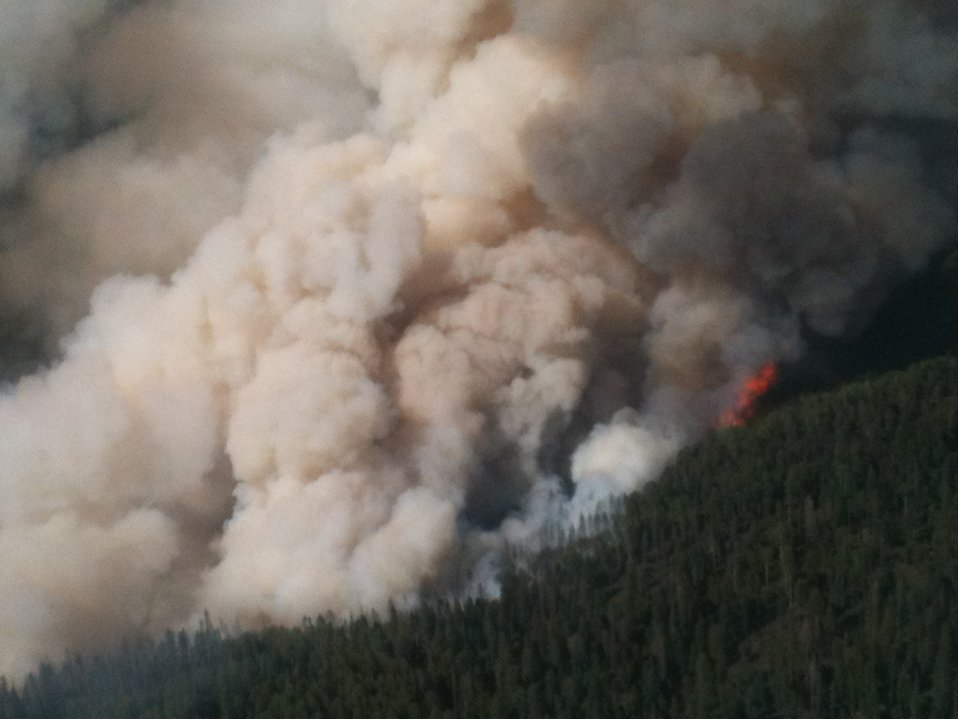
The Little Sand Wildfire burns in the San Juan National Forest near Pagosa Springs, CO, Saturday, on June 16, 2012. The wildfire was started by a lightening strike on May 13, 2012. The fire is in rugged and inaccessible terrain, north of the Piedra River, and is currently estimated at 14,224 acres with 30% containment as of June 20, 2012.